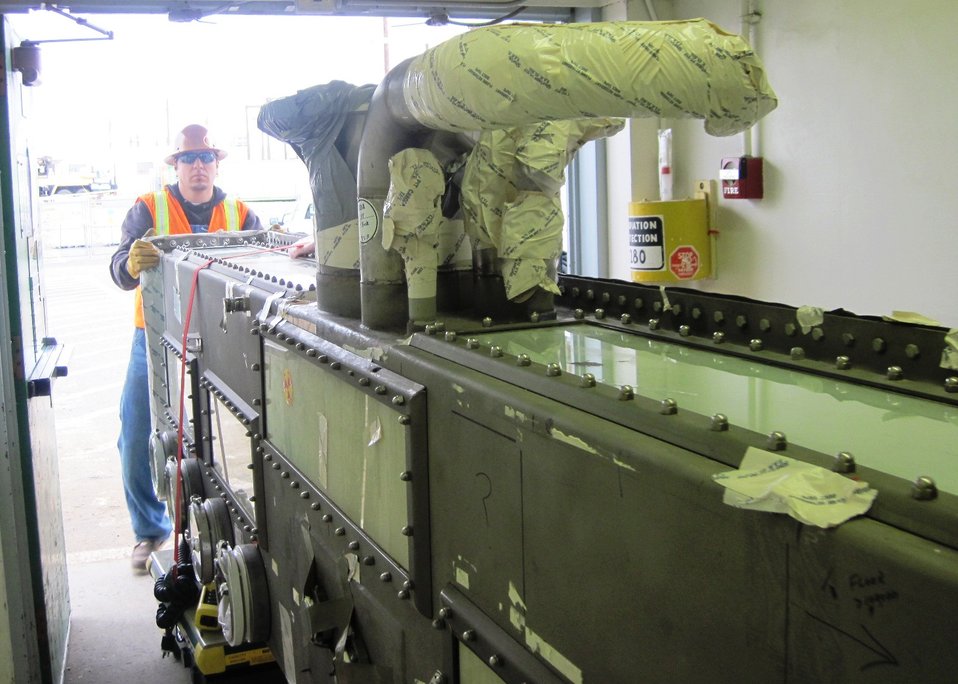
Hanford Richland Cleanup

Recovery Act workers remove a section of a glove box from the Plutonium Finishing Plant at the Hanford Site.